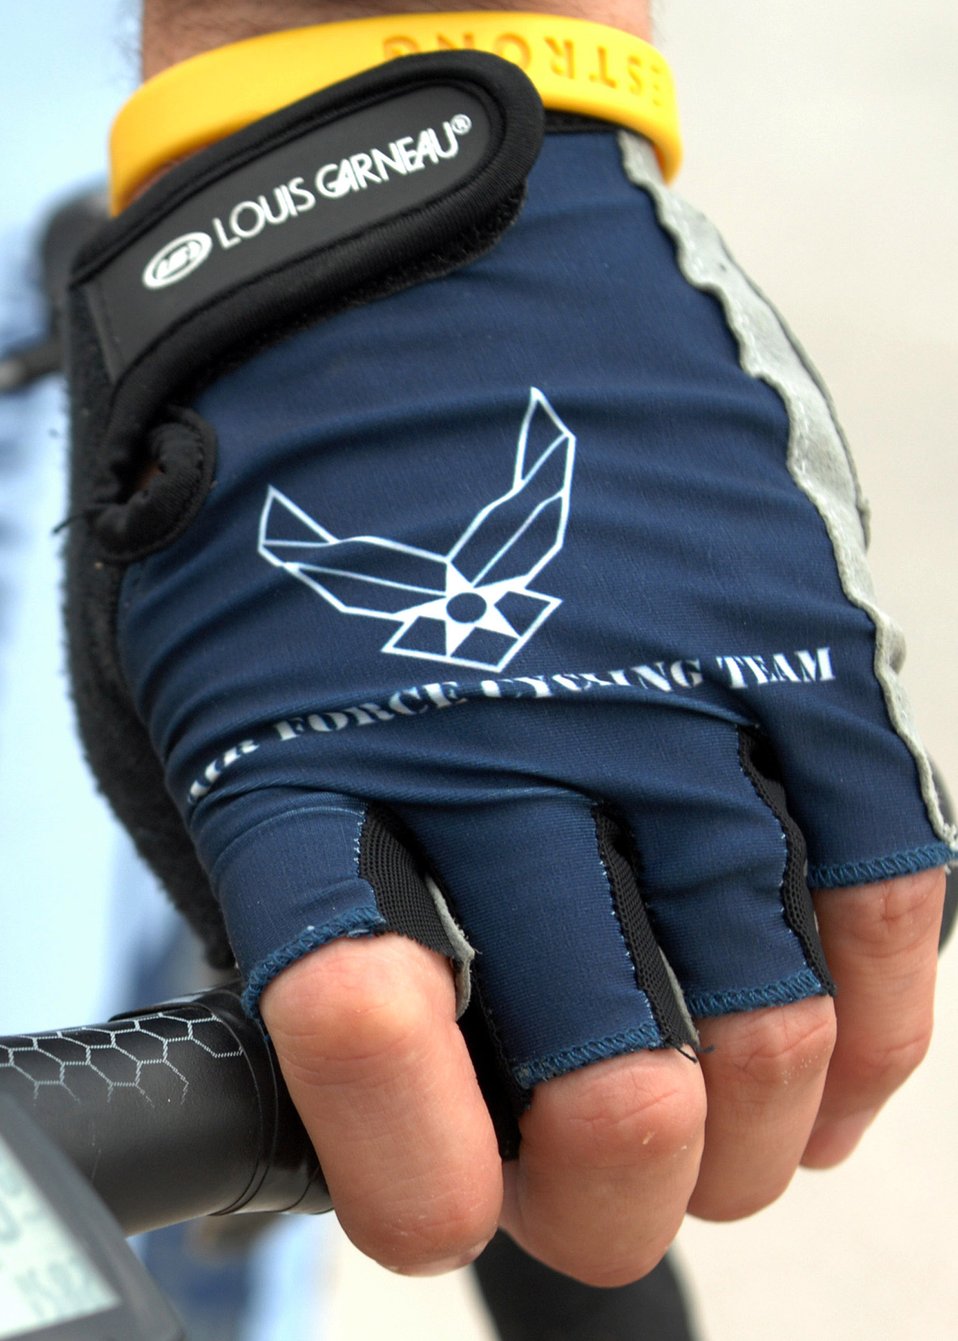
Airmen cycle across Iowa

A member of the U.S. Air Force Cycling Team relaxes his grip momentarily as he makes his way from Spencer to Humboldt, Iowa, during the third day of the Register's Annual Great Bike Ride Across Iowa, known as RAGBRAI, a cycling event sponsored by the Des Moines Register newspaper. This is the 13th year the Air Force Cycling Team has participated in the RAGBRAI to support Air Force recruiting.